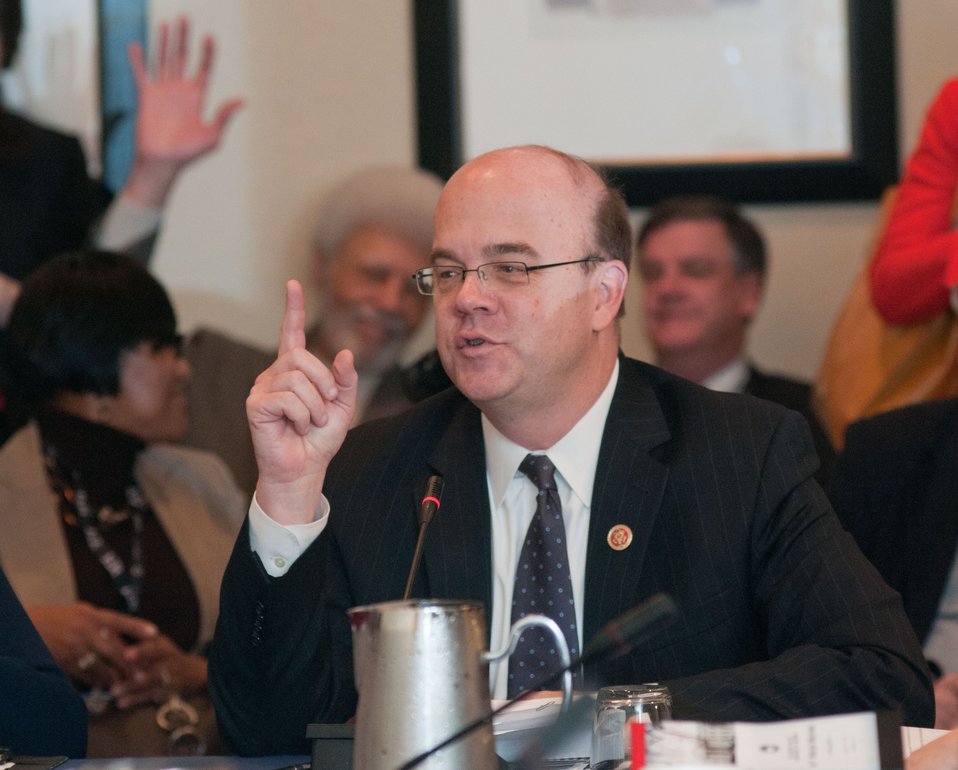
U.S. Representative Jim McGovern recognizes Oakland, CA Mayor Ron Dellums, in background, during his address to the Food Policy session of the United States Conference of Mayors 81st Winter Meeting, in Washington D.C., on Thursday, Jan 17, 2013.